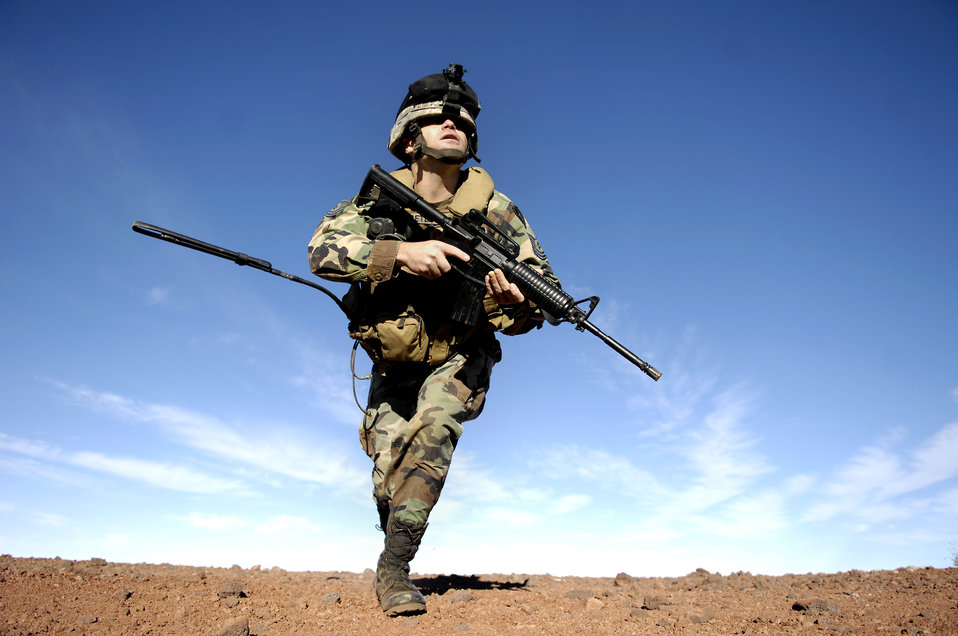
Moving into position

Tech. Sgt. Rick Setlock moves to another firing position during Exercise Koa Lightning training Oct. 23 at the Pohakuloa Training Area in Hawaii. Sergeant Setlock is a tactical air control party member from the 25th Air Support Operations Squadron, Wheeler Army Airfield, Hawaii.